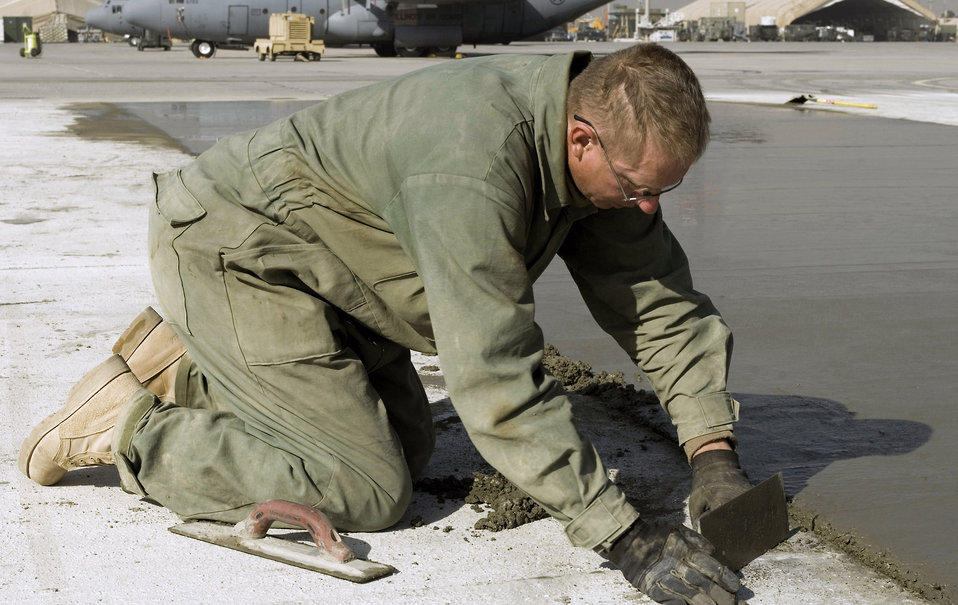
Civil engineer crews improve Bagram infrastructure

Staff Sgt. Edward Sells smoothes freshly poured concrete on the flightline Nov. 25 at Bagram Airfield, Afghanistan. More than 3,500 cubic meters of concrete are being poured to expand and construct ramps and taxiways as part of airfield expansion projects. Sergeant Sells is assigned to the a 455th Expeditionary Civil Engineer Squadron and deployed from Lackland Air Force Base, Texas.